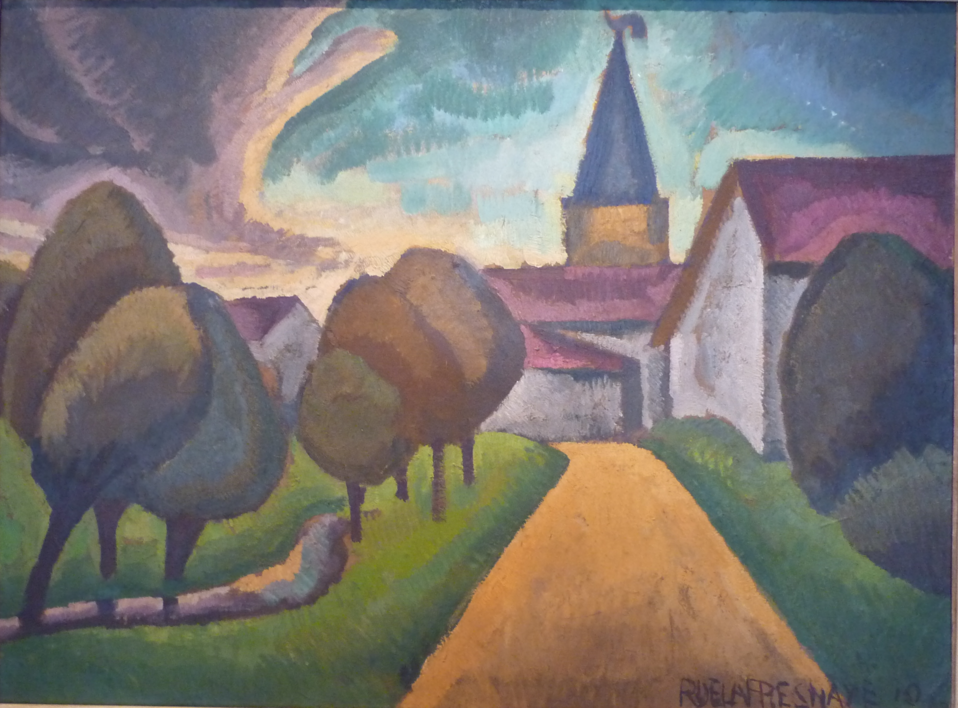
Français : L'entrée du village Huile sur bois Tableau exposé au musée d'art moderne de Troyes Donation de Pierre et Marie Lévy aux musées nationaux en 1976 N° d'inventaire : MNLP 184 Informations détaillées : http://www.culture.gouv.fr/public/mistral/joconde fr?ACTION=RETROUVER&FIELD 98=AUTR&VALUE 98=LA FRESNAYE Roger de&NUMBER=7&GRP=0&REQ=((LA FRESNAYE Roger de) :AUTR )&USRNAME=nobody&USRPWD=4$%34P&SPEC=1&SYN=1&IMLY=&MAX1=1&MAX2=1&MAX3=100&DOM=All